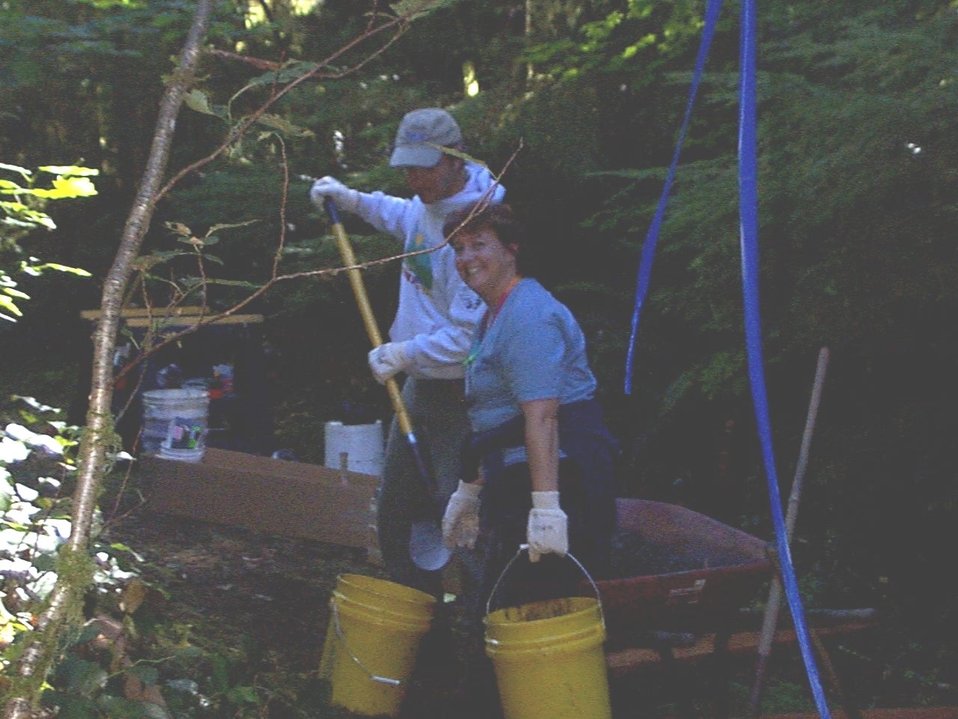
Volunteers construct steps on the trail at McGowen Creek.